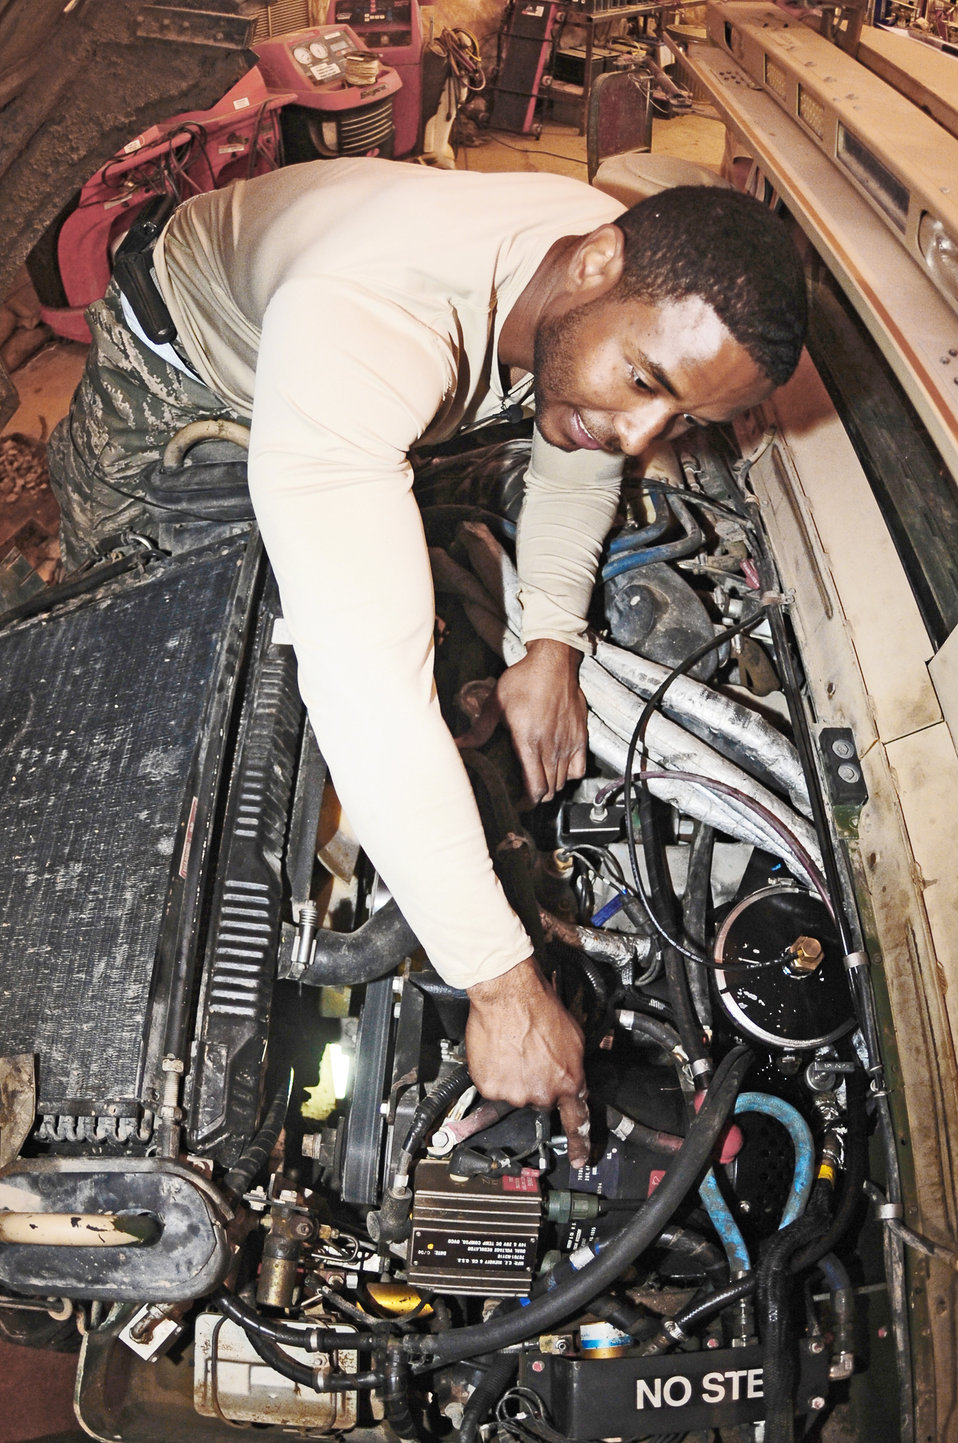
It's like a maze

Tech. Sgt. Damien Moody inspects the engine of a humvee at Ali Base, Iraq, Feb. 9, 2010. He is a vehicle maintenance technician with the 407th Expeditionary Logistics Readiness Squadron and deployed from Eglin Air Force Base, Fla.